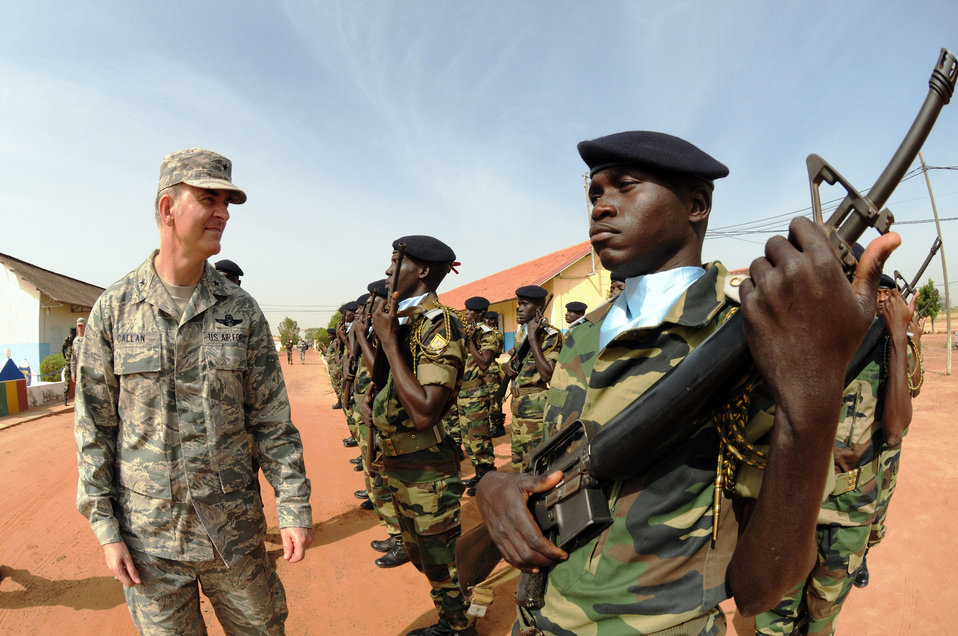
Brig. Gen. Michael W. Callan

Members of the Senegal army's 3rd Infantry Battalion honor platoon greet Brig. Gen. Michael W. Callan Oct. 30, 2009, at Dakar, Senegal. General Callan served as guest speaker at the graduation ceremony for the first class of Senegal NCO academy instructors.